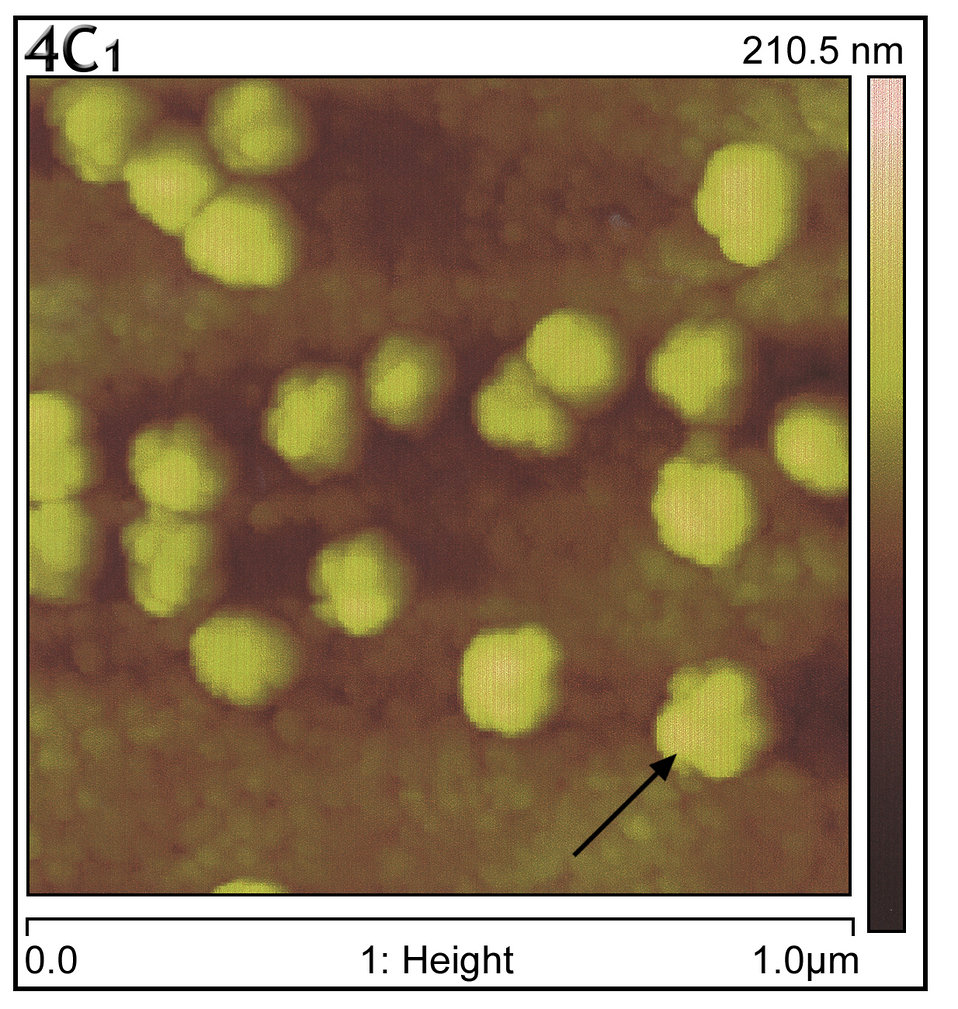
Using the NanoScope IV MultiMode� atomic force microscope, the 'knobby' virion surface structure was visualized (arrow).